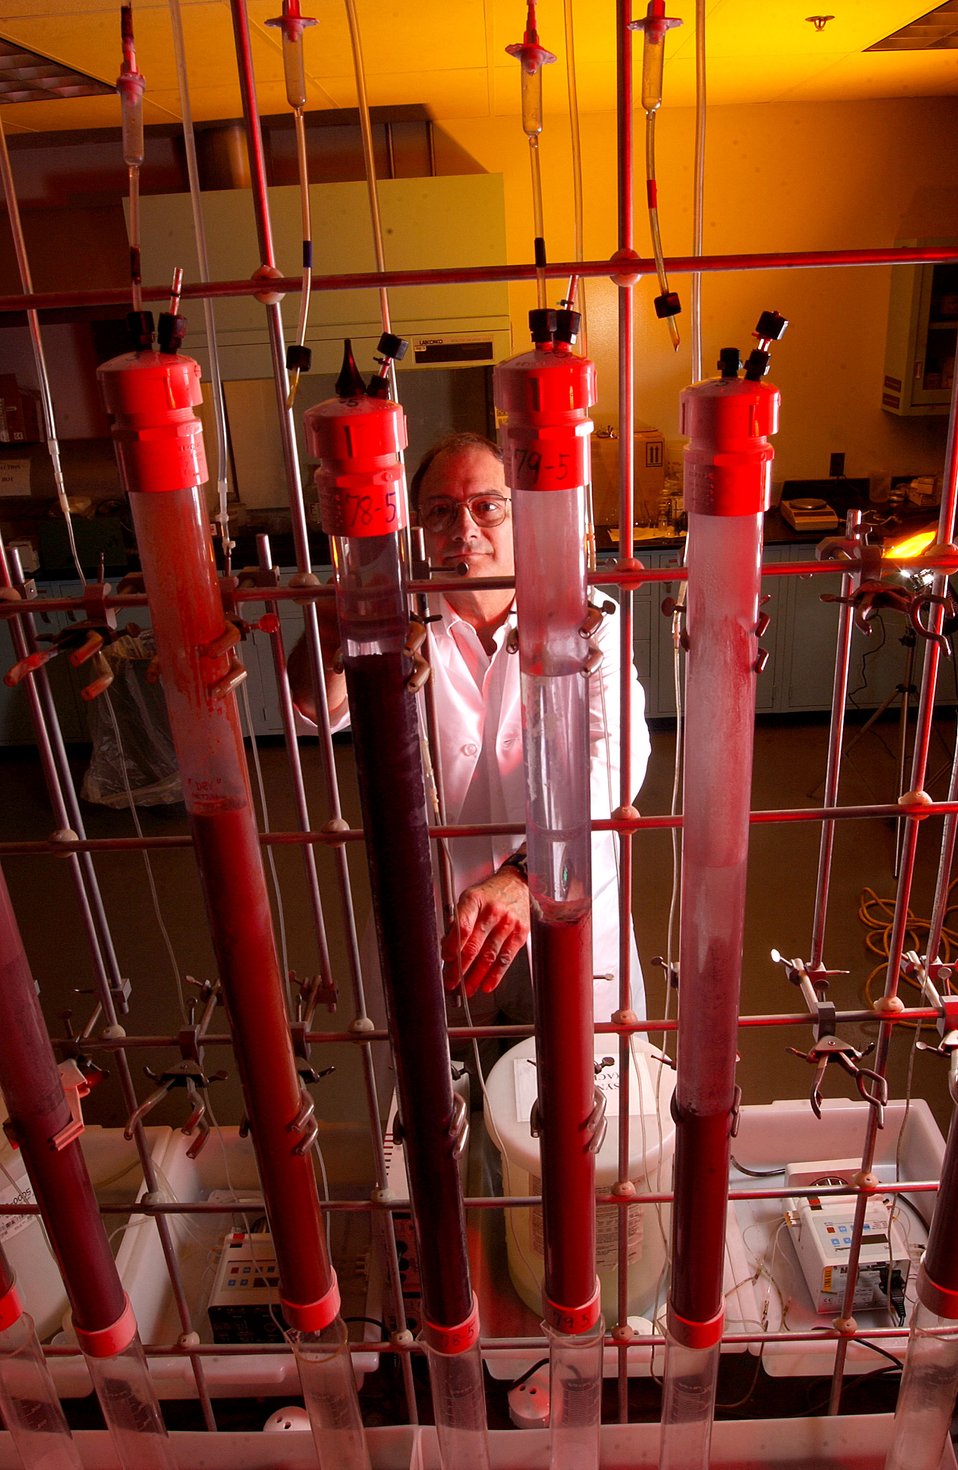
George Kazonich, an engineer in the National Energy Technology Laboratory's Office of Science and Engineering Research, monitors the flow through fly ash leaching columns.
NETL'S conduct this research to determine the environmental acceptability of placing coal combustion fly ashes in various beneficial use or disposal environments.